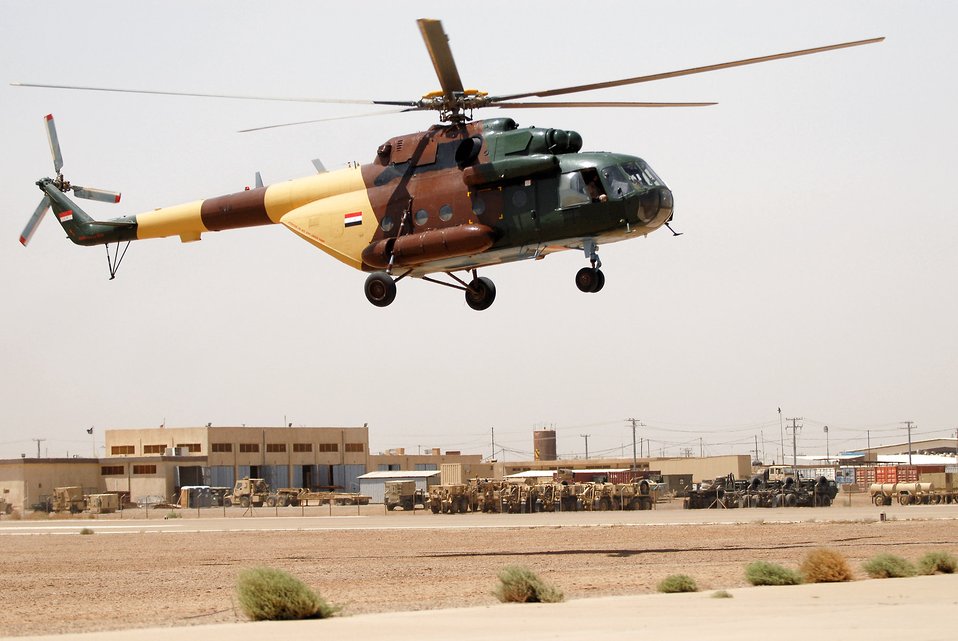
Airman volunteers for 18-month deployment to help Iraq

An Mi-17 multi-role helicopter lands May 28 after a training mission over Camp Taji, Iraq. The missions enable the Air Force pilots assigned to the 770th Air Expeditionary Advisory Squadron to train Iraqi air force pilots on the practical applications of lessons learned in a classroom setting. The 770 th AEAS is responsible for training and assisting two Iraqi air force squadrons that are in the process of setting up their own helicopter wing.